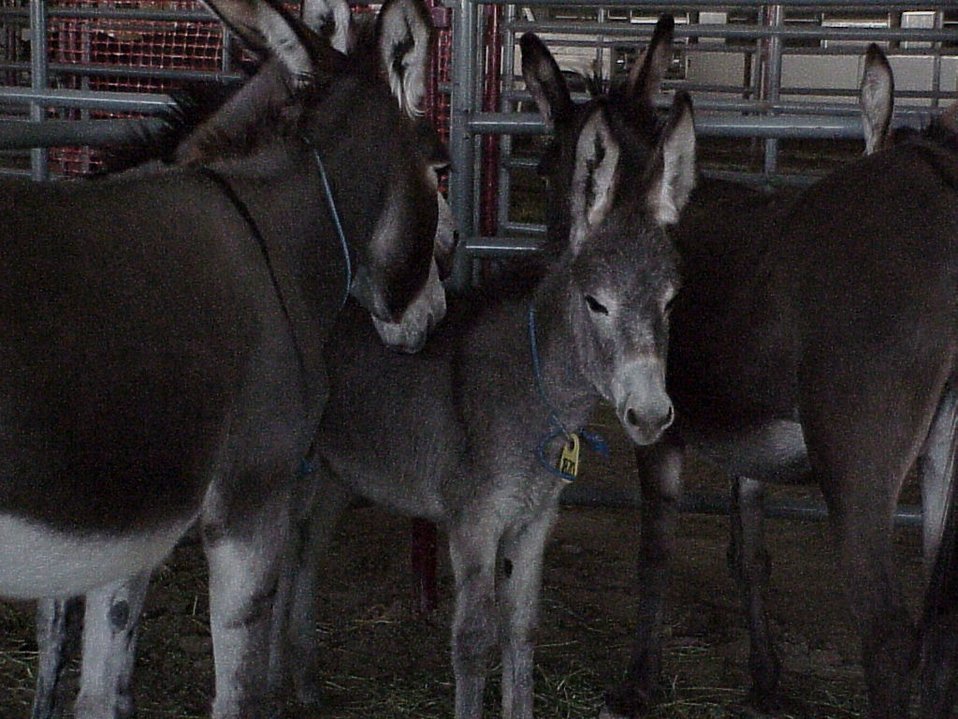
Burros Lewiston Wild Horse and Burro Adoption Program Auction WHB indoor auction Cottonwood Field Office UCSC Upper Columbia Salmon Clearwater District